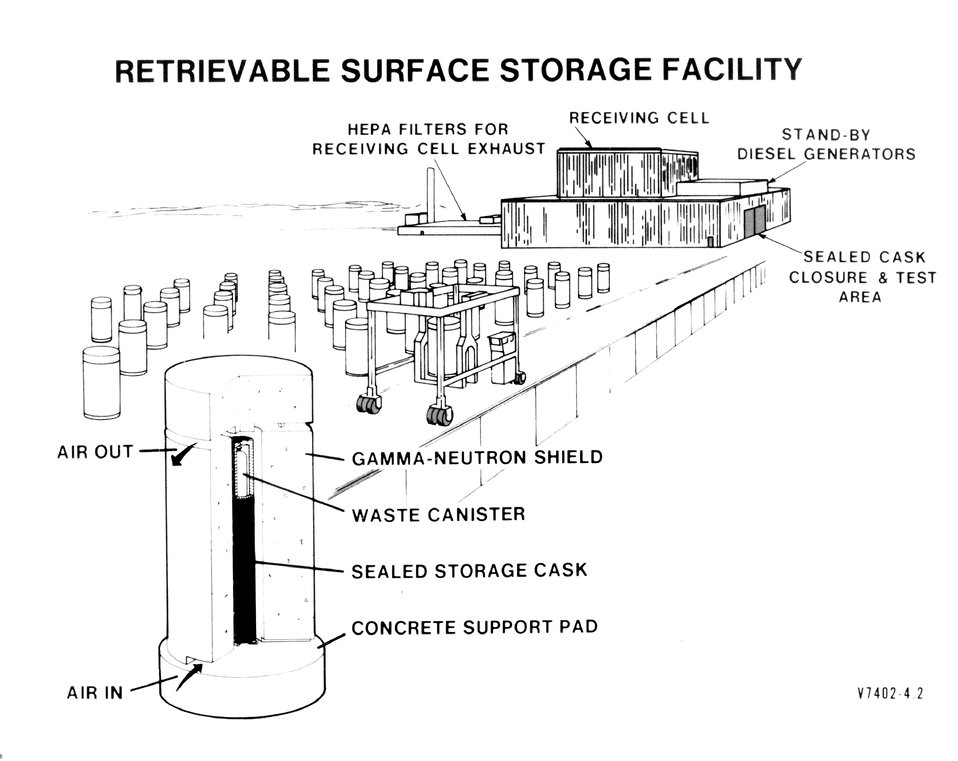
An interim storage facility hor high level wastes generated by commercial nuclear power reactors until the year 2000 has been studied and designed. c. undated